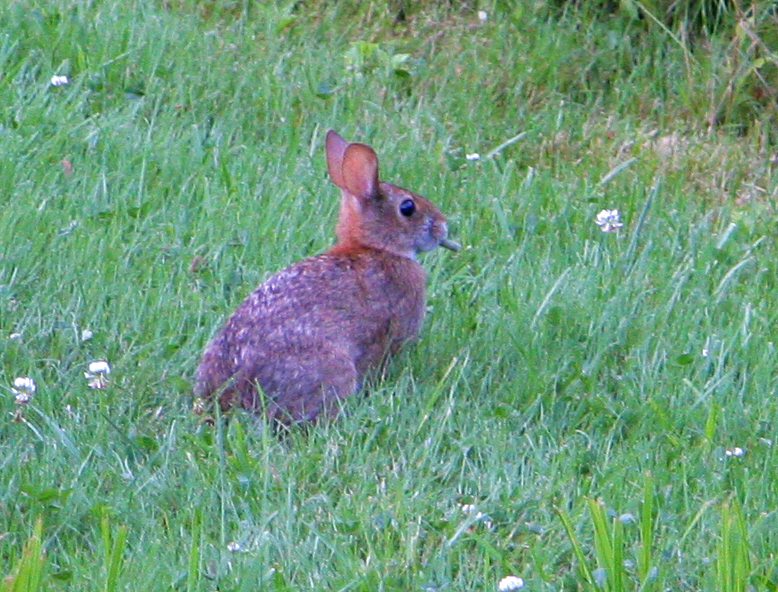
New England cottontail